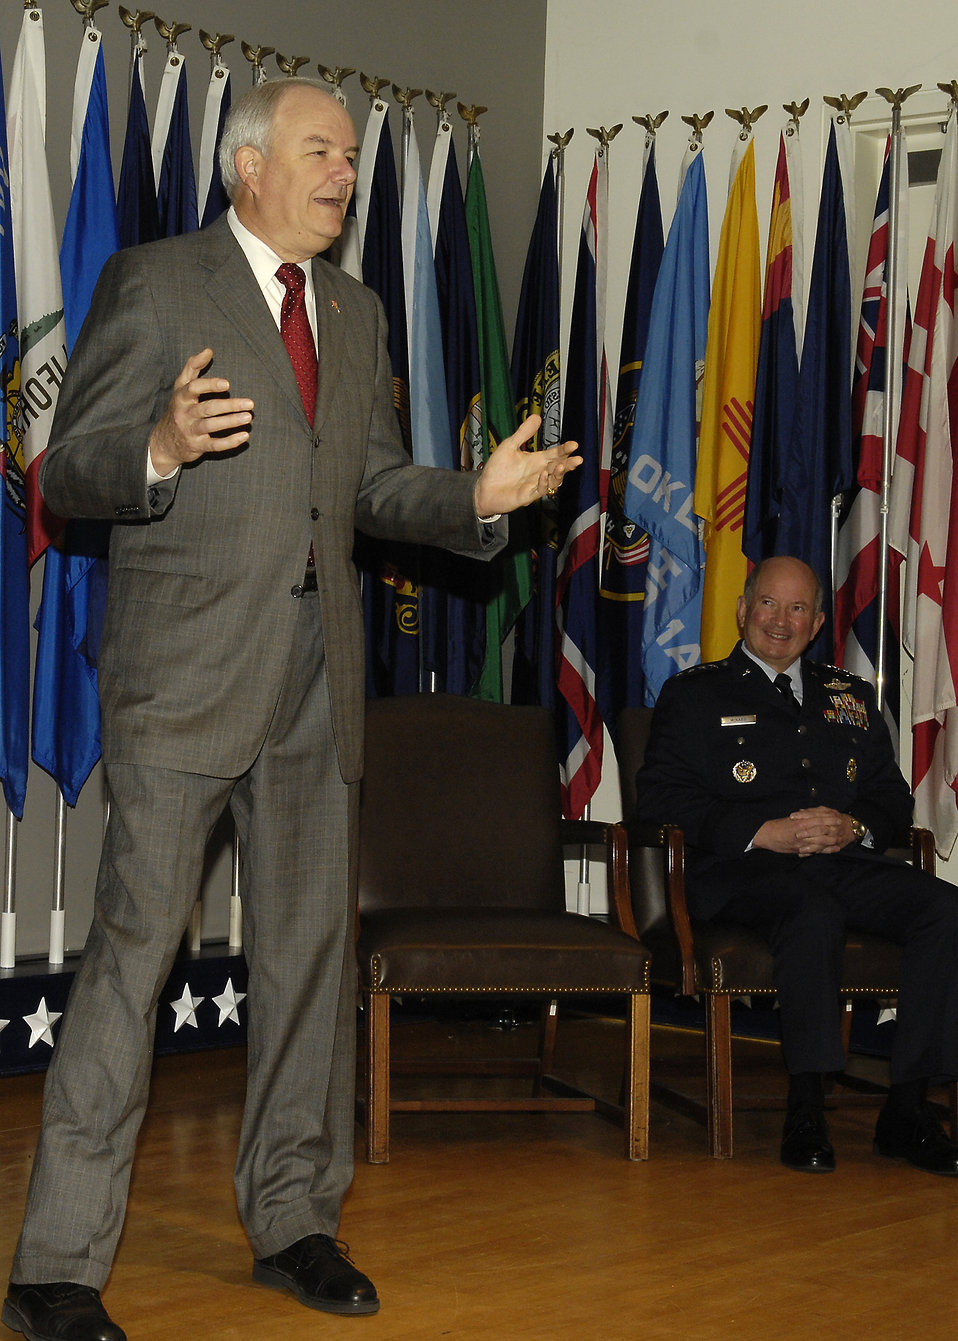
Presidential Rank Awards presented

Air Force Vice Chief of Staff Gen. Duncan J. McNabb (seated) watches Secretary of the Air Force Michael W. Wynne address the audience April 14 during the Air Force Presidential Rank Awards Ceremony at Arlington National Cemetery.